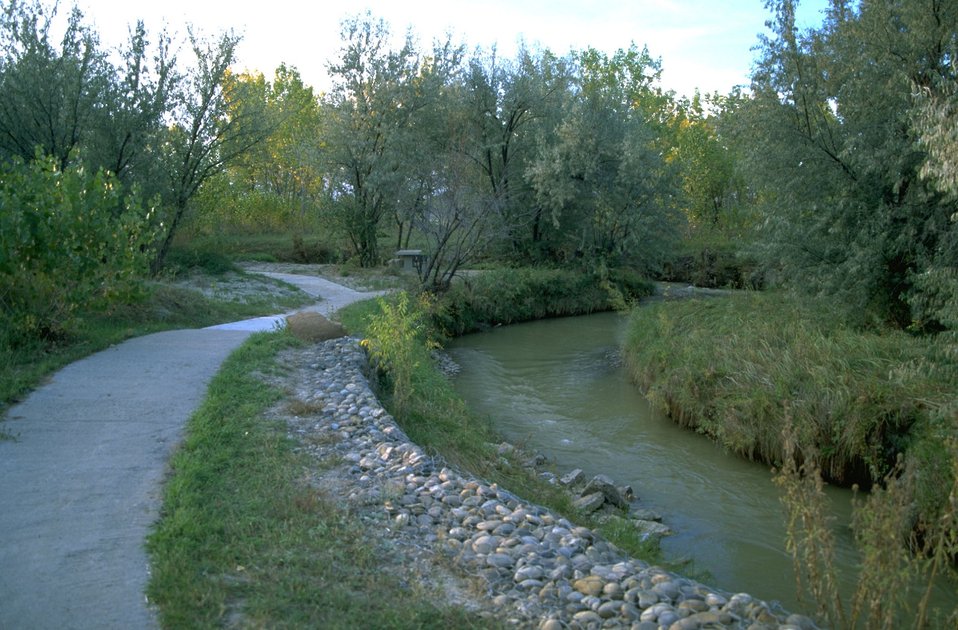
Concrete trail and bank stabilization along Jones Creek at Matthews Recreation Site